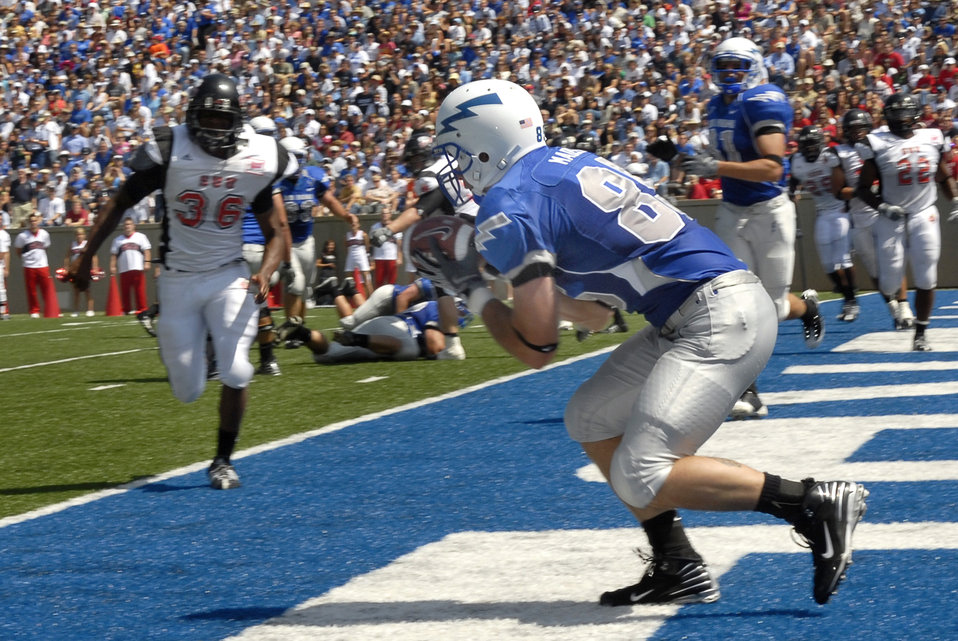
Falcon record two safeties in 41-7 rout

Tight end Keith Madsen catches the game's second touchdown. Quarterback Shea Smith led the Falcons on a 41-7 rout of Southern Utah University, scoring his first career rushing and passing touchdowns.